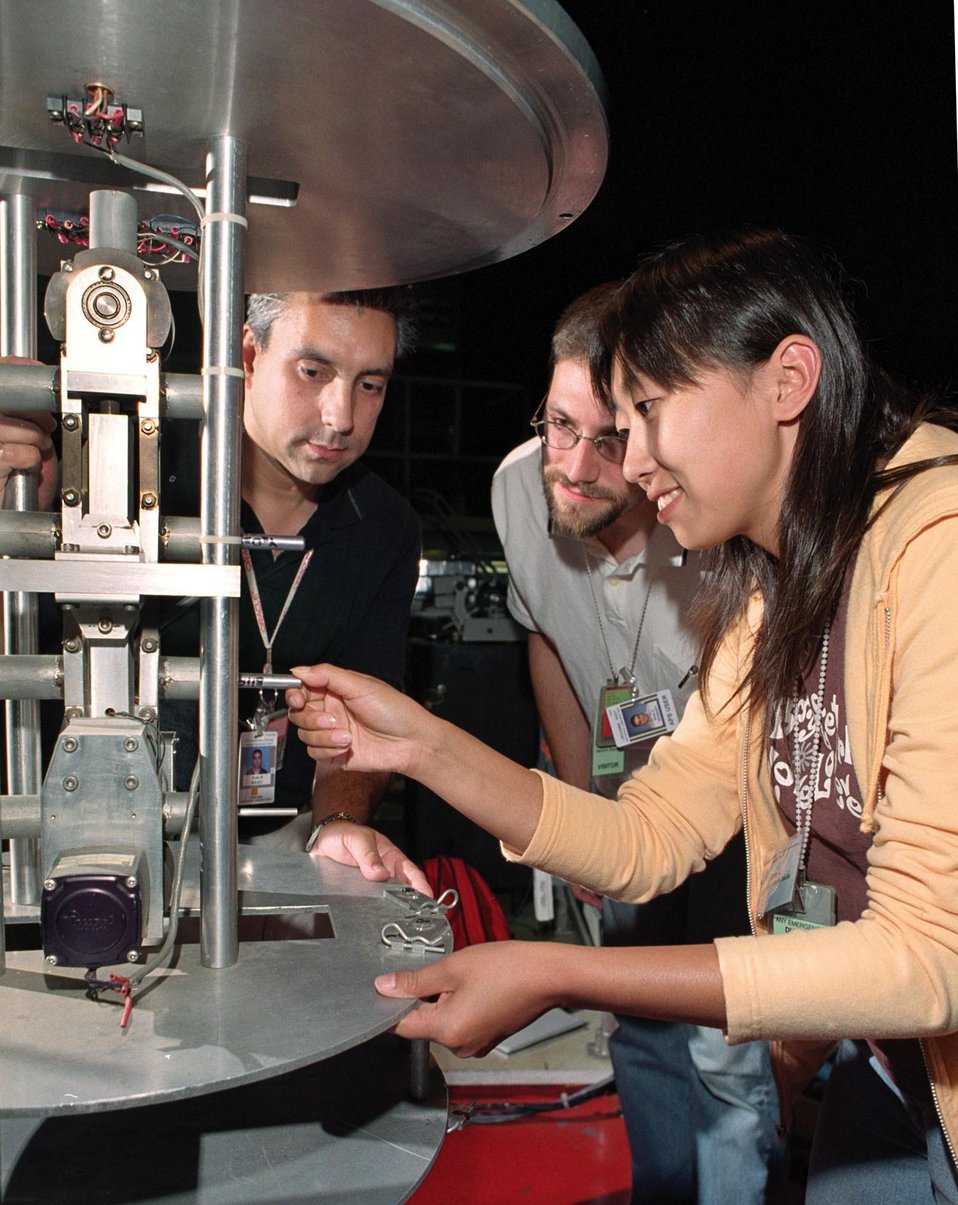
ANL RESEARCHER OVERSEES GRADUATE STUDENTS INSTALLING A SAMPLE FOR TESTING IN THE GENERAL PURPOSE POWDER DIFFRACTOMETER AT IPNS.

SINCE ARGONNE IS THE ONLY LABORATORY WITH BOTH AN X-RAY SYNCHROTRON AND A SPALLATION NEUTRON SOURCE IT HOSTS THE NATIONAL SCHOOL ON NEUTRON AND X-RAY SCATTERING. HERE A RESEARCHER (LEFT) FROM ANL'S INTENSE PULSED NEUTRON SOURCE (IPNS) DIRECTS THE GRADUATE STUDENTS WHO ARE ABOUT TO TEST A SAMPLE IN THE GENERAL PURPOSE POWDER DIFFRACTOMETER AT THE IPNS.